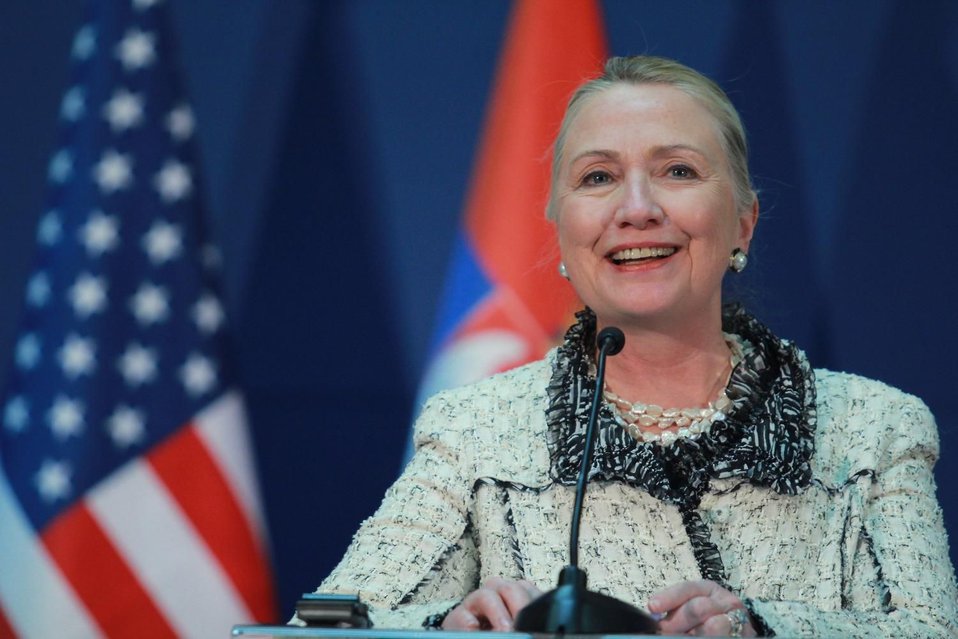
Secretary Clinton Addresses Reporters

U.S. Secretary of State Hillary Rodham Clinton delivers a joint press statement with Serbian Prime Minister Ivica Dacic and EU High Representative Catherine Ashton in Belgrade, Serbia, October 30, 2012. [FoNet photo]